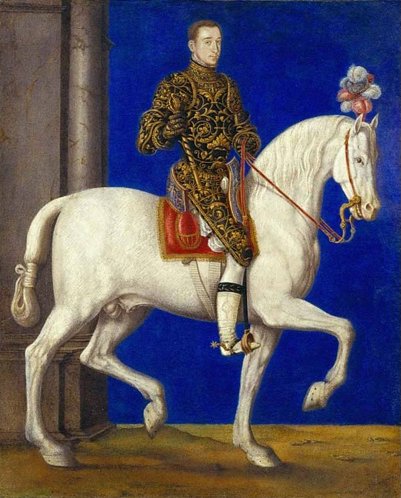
Gouache on parchment equeatrian portrait of Dauphin Henry II by François Clouet, c. 1543, Menil Collection